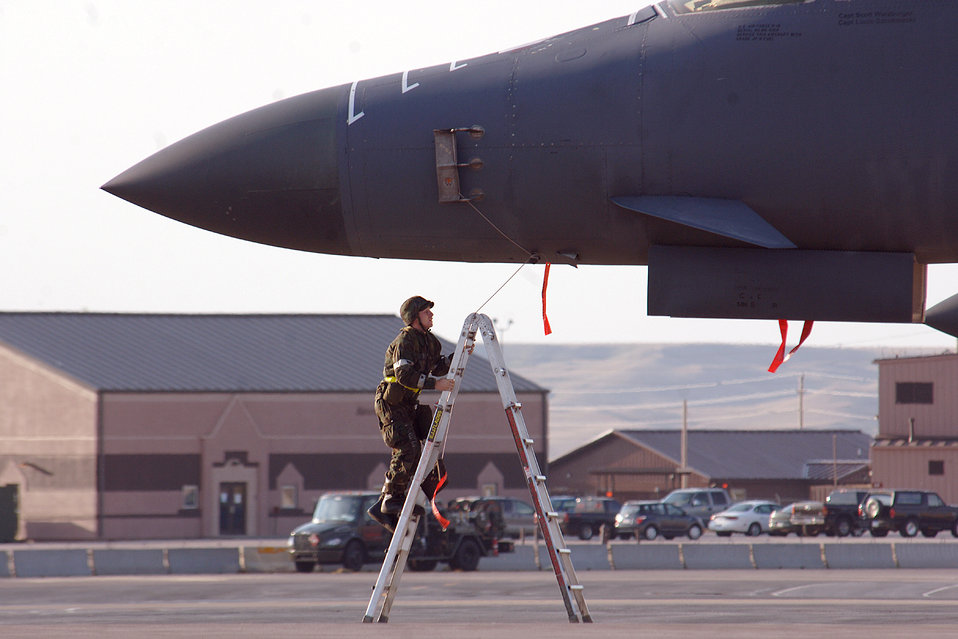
Routine checkup

An Airman from the 28th Aircraft Maintenance Squadron at Ellsworth Air Force Base, S.D., performs a routine check on a B-1 Lancer during an operational readiness inspection on July 18. Pre-checks include avionics, control surfaces and engine runs.